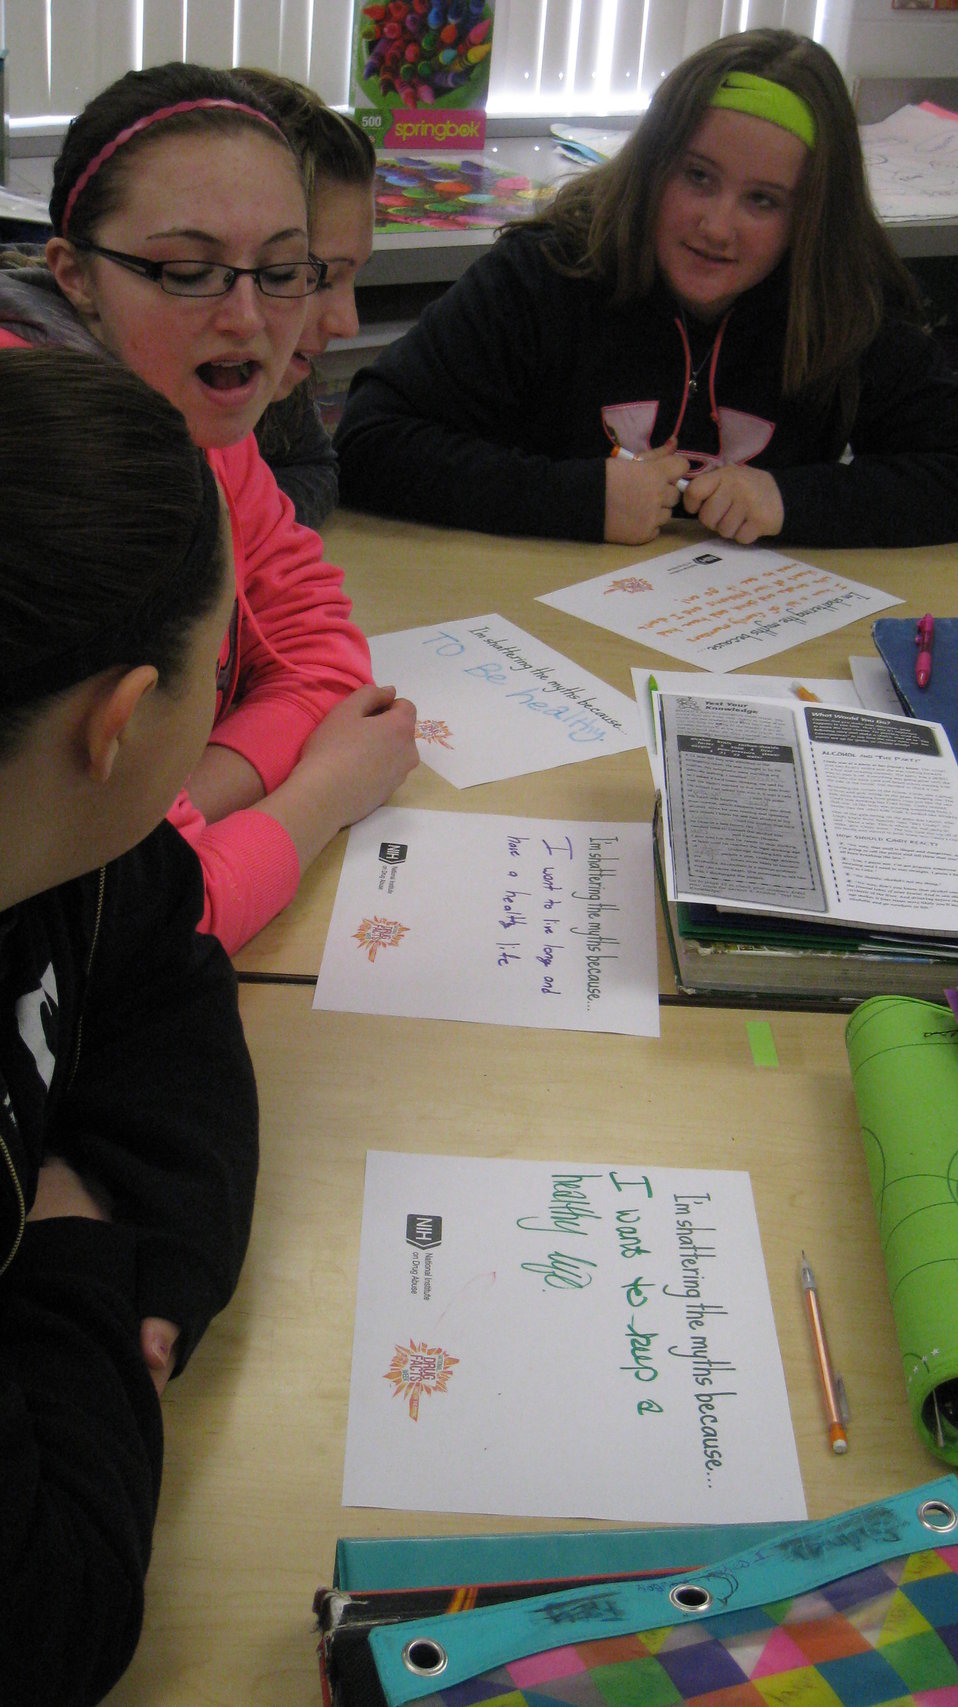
I'm Shattering the Myths Because...

Teenagers from the Van Buren County SAFE Coalition's, Youth Leadership Council (YLC) in Keosauqua, Iowa participate in various events during National Drug Facts Week, 2014.